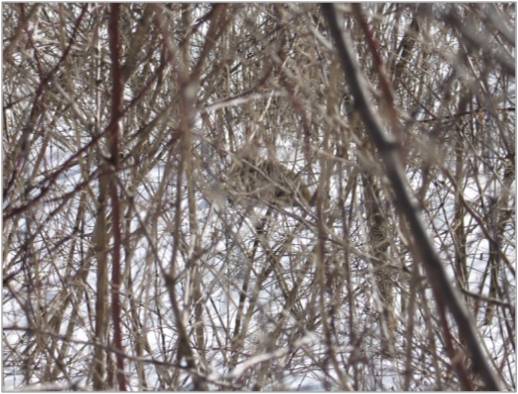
New England cottontail in habitat